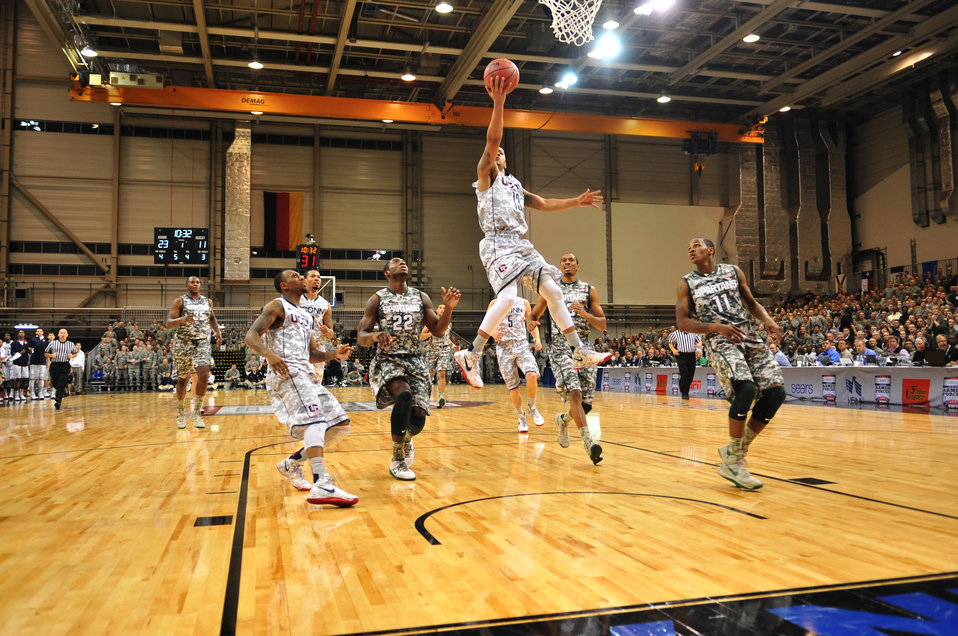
Armed Forces Classic

University of Connecticut guard Shabazz Napier goes up for a layup against Michigan State players during the Armed Forces Classic basketball game at Ramstein Air Base, Germany, Nov. 10, 2012. Connecticut overcame Michigan 66-62.